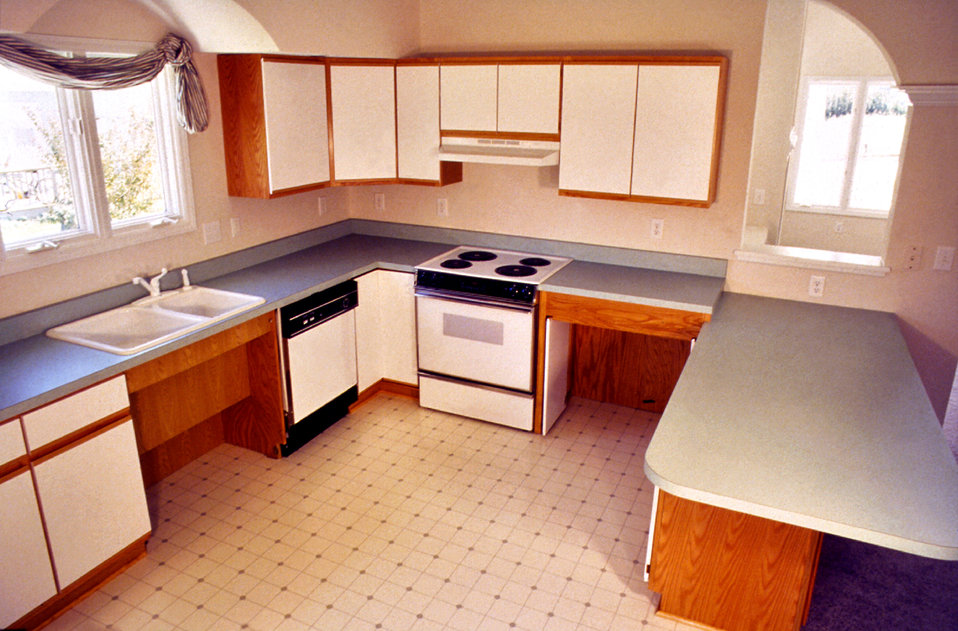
This 1994 image depicted the interior of a kitchen that had been ergonomically designed to accommodate the widest range of people, including those with, and without mobility impairments. By having strategically placed adaptable base cabinets, which means those cabinets constructed so as to allow their bases to be converted into knee-spaces, the usability, and functionality of this kitchen facility had been greatly enhanced. Also, the location of these base cabinets beside critical appliances such as the sink and stove, facilitated the usability of these appliances by all. Base cabinets that convert into knee spaces are critical for people using wheelchairs, and those with stamina or balance limitations who must sit while completing extended food preparation activities.